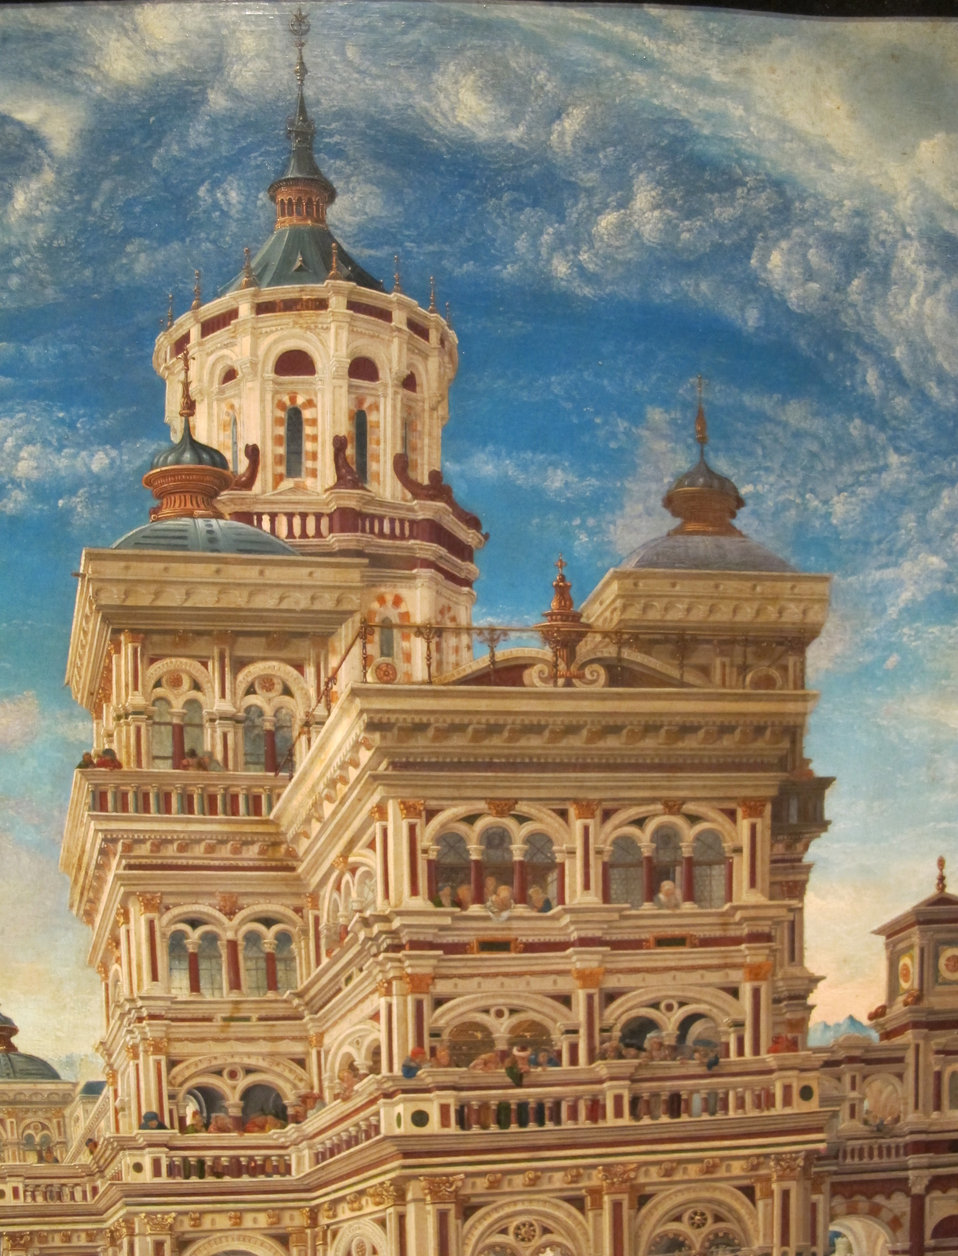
Albrecht altdorfer, susanna al bagno 07